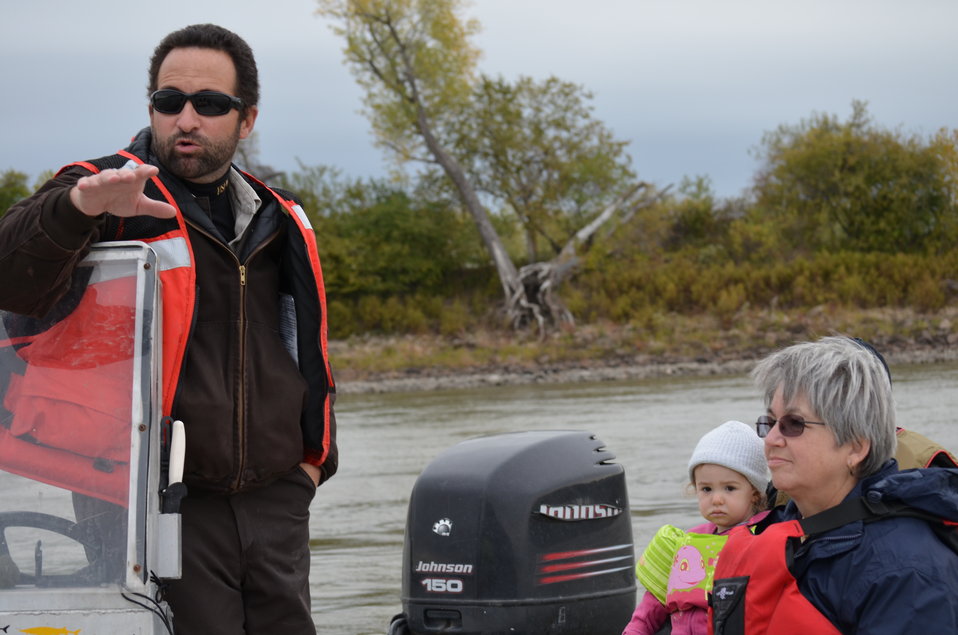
Education

USFWS Project Leader Tracy Hill discusses the changing landscape of the Missouri River over time. USFWS/Ashley Spratt